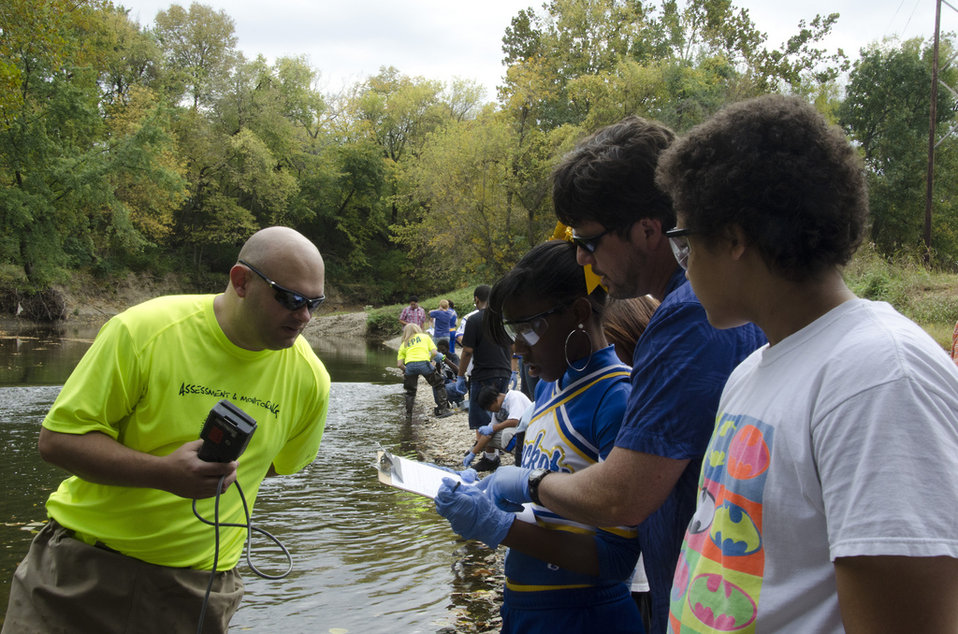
October 7, 2011 Learning about water quality and environmental health

Center High School Students, Blue River Watershed Association volunteers and EPA scientists team up to collect water quality information and trash along Indian Creek, Kansas City, Missouri.